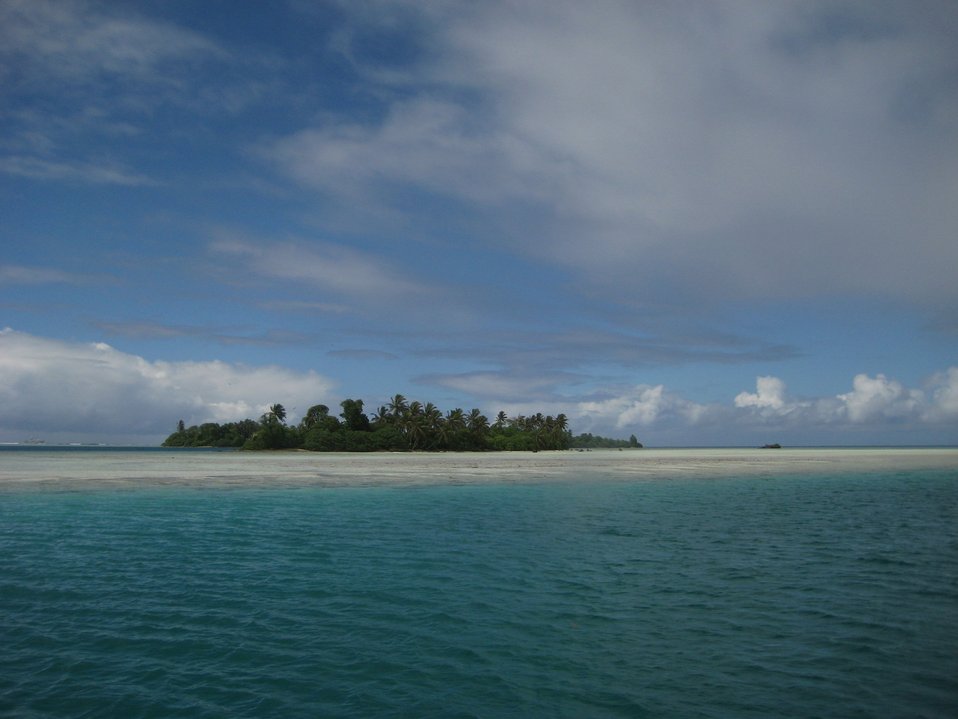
Looking over the reef to Palmyra Island. The NOAA ship Hi' ialakai is offshore in the left of the image.